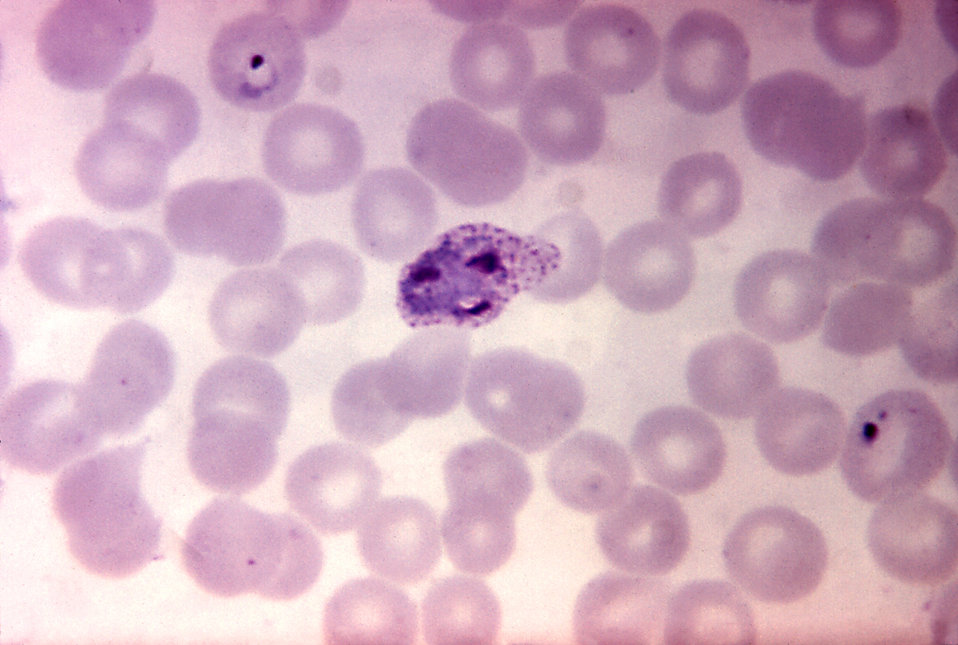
This photomicrograph depicts an immature Plasmodium vivax schizont (Cntr.); Mag 1125X.